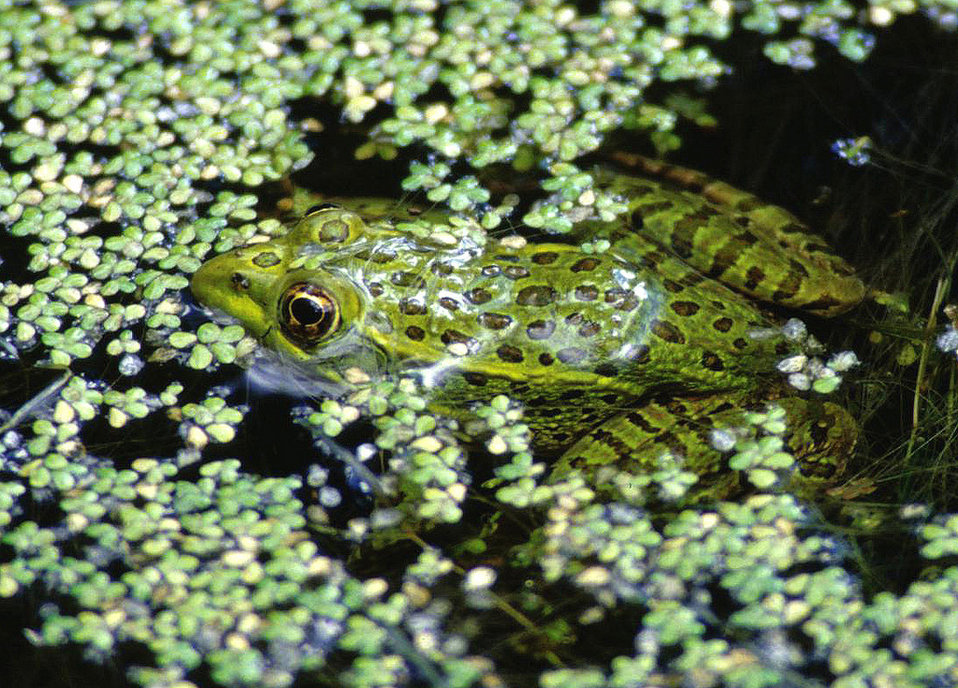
Chiricahua leopard frog

Scientific name: Rana chiricahuensis
Status: Threatened